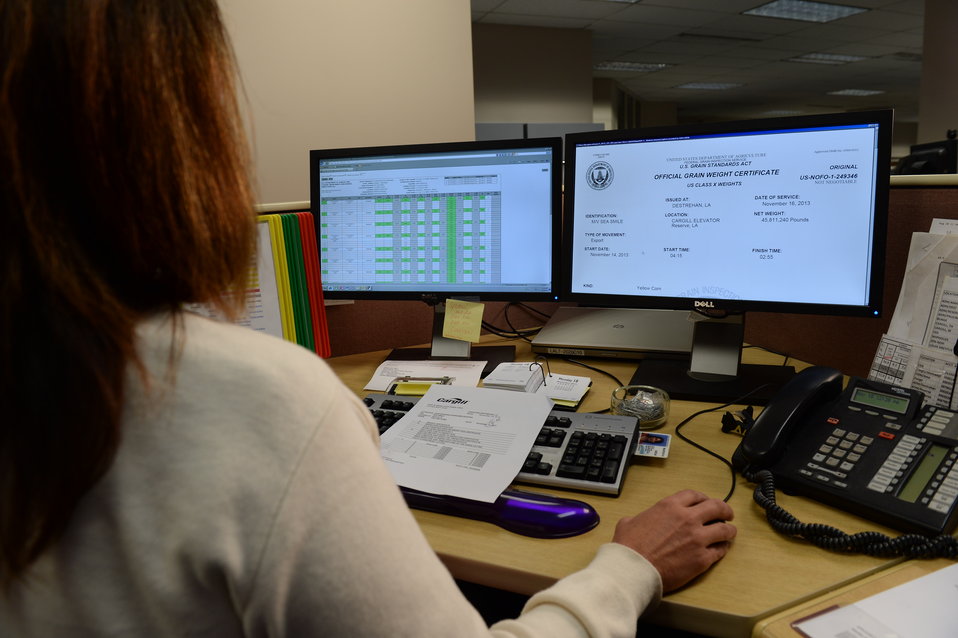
A U.S. Department of Agriculture (USDA) Grain Inspection, Packers and Stockyards Administration (GIPSA) Federal Grain Inspection Service (FGIS) employee processes the grain test results and export clearance forms at the USDA GIPSA FGIS inspection laboratory in New Orleans, LA on Monday, Nov. 18, 2013.